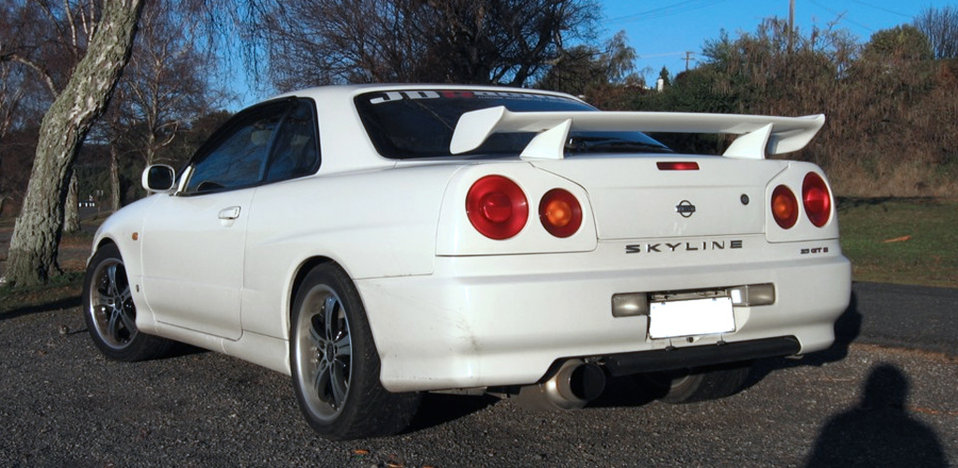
An example of R34 Nissan Skyline 25GT-t Coupe, photo was taken by me.